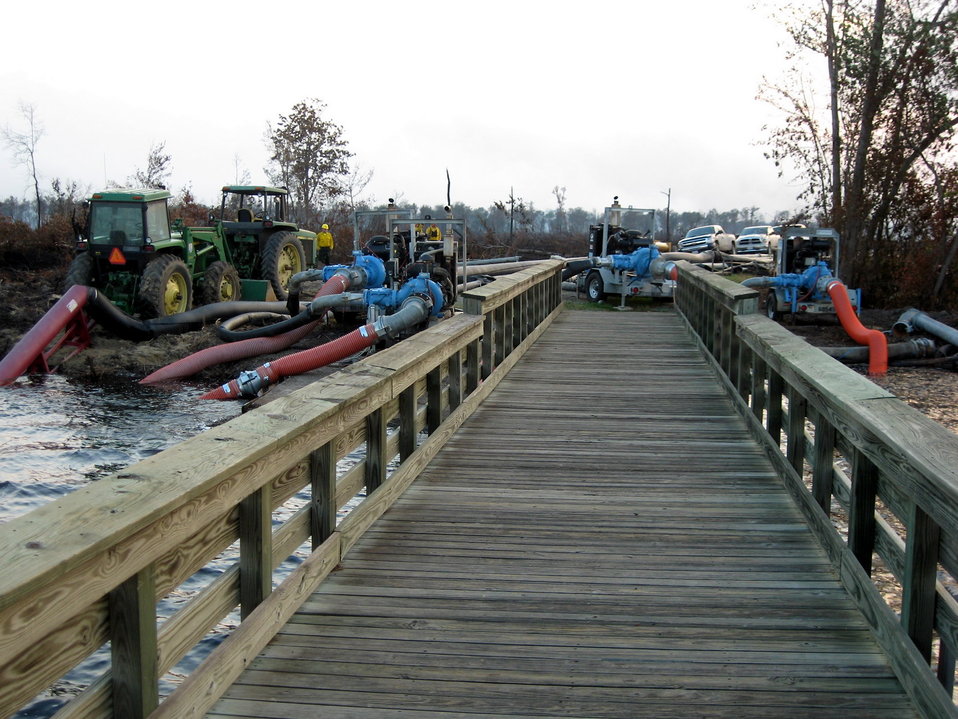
Boardwalk to pumps

Suffolk, VA, August 2011: High-volume pumps flank a boardwalk at Lake Drummond on Great Dismal Swamp National Wildlife Refuge At their peak, the pumps drew down the lake 1.2 inches per day to flood ditches to put out the 6,300-acre Lateral West Fire burning deep in swamp peat.